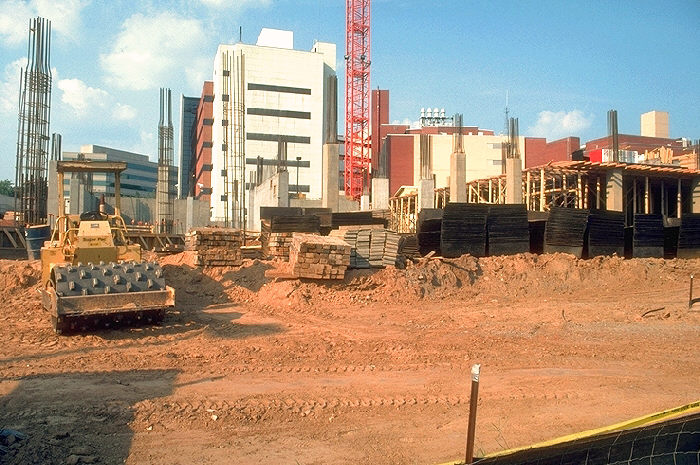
On the Centers for Disease Control's (CDC) Roybal Campus, located in metropolitan Atlanta, Georgia, this September, 1998 image depicts the early phases of construction of Building 17.